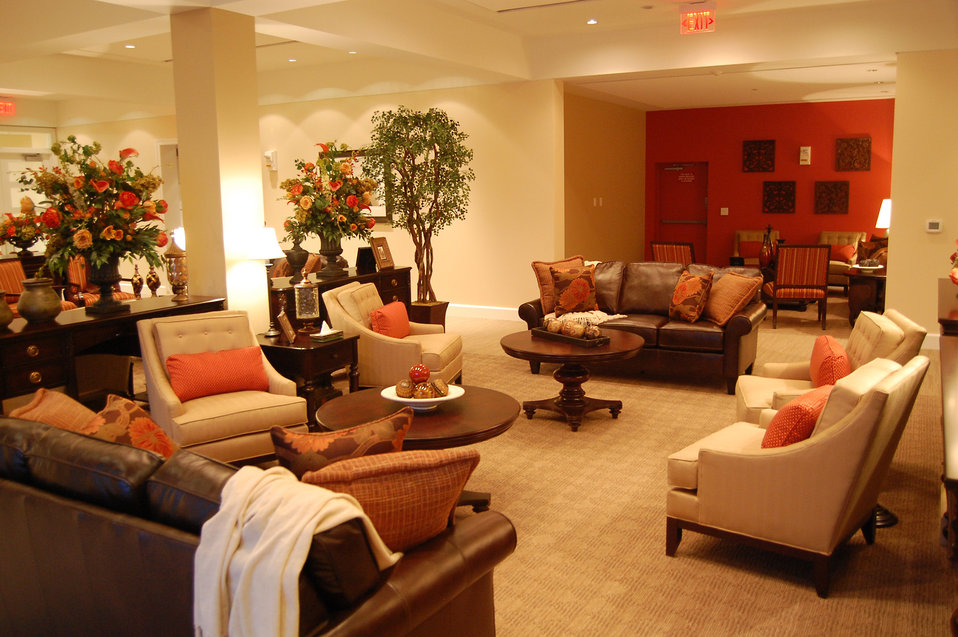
New center opens under AFMAO

One of several comfortable living-room type spaces inside the new Center for the Families of the Fallen at Dover Air Force Base, Del.